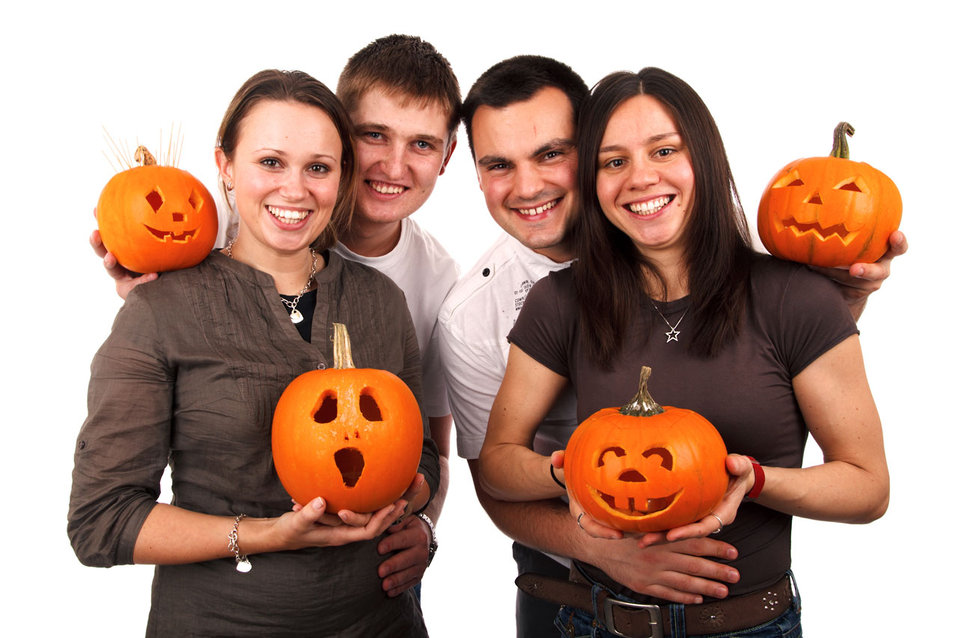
Halloween celebration

Group of people holding their pumpkins isolated on white background.